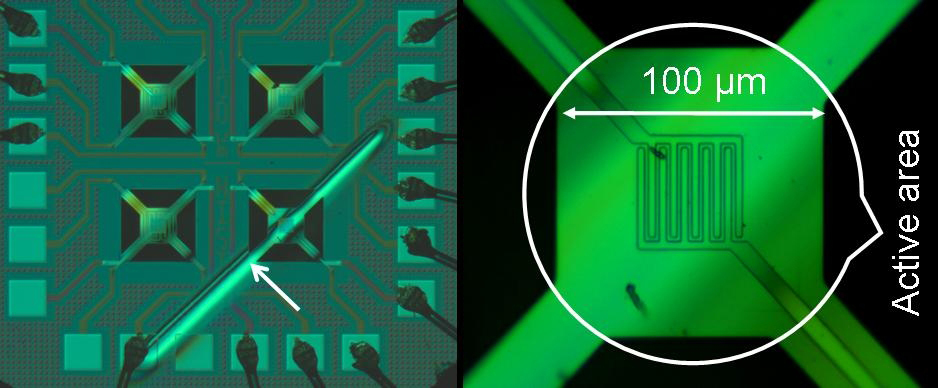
Microhotplate Technology